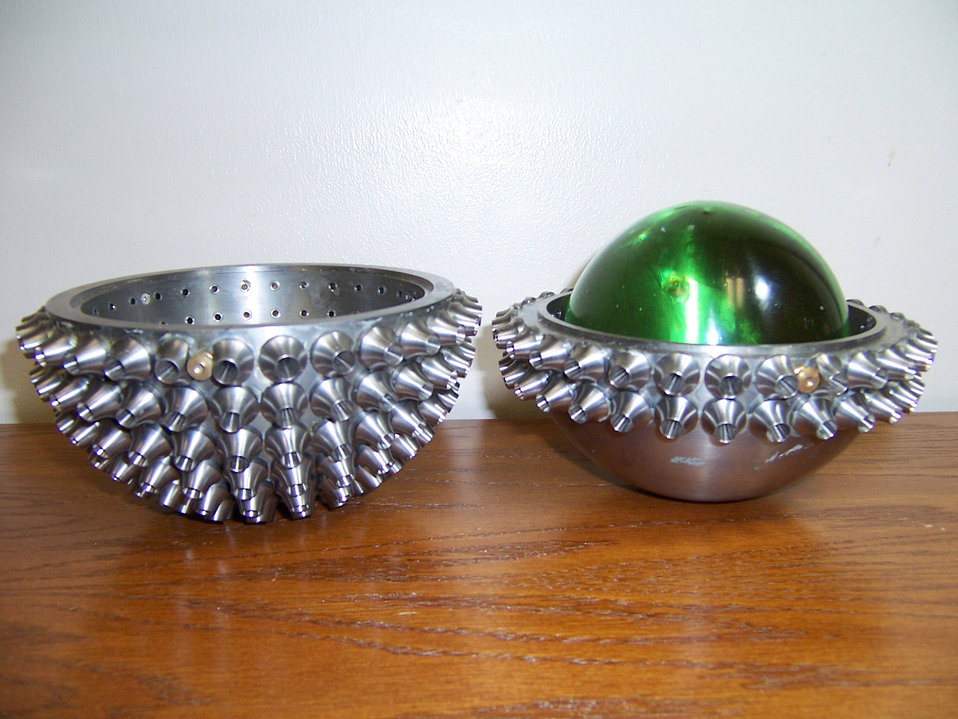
SRNL Deploys Innovative Radiation Mapping Device

AIKEN, S.C. – The Savannah River National Laboratory (SRNL), EM’s national lab, has made strides with remote technology designed to reduce worker exposure while measuring radiation in contaminated areas.
Building on a successful collaboration with the United Kingdom’s National Nuclear Laboratory (NNL), SRNL completed successful deployments of RadBall, a radiation-mapping device, after testing at the Lab’s shielded cells. The device provides technology to remotely perform characterization needed for deactivation and decommissioning (D&D) of radioactively contaminated facilities.

A single RadBall can be positioned in a highly contaminated area, glove box, or hot cell and left alone to passively collect data, instead of personnel spending valuable time and incurring potential exposure carrying out manual scanning and surveying. The device consists of a colander-like outer shell that houses a baseball-sized sphere made of a radiation-sensitive polymer. Those areas of the polymer sphere that are exposed react to the radiation, becoming increasingly more opaque, in proportion to the absorbed dose.